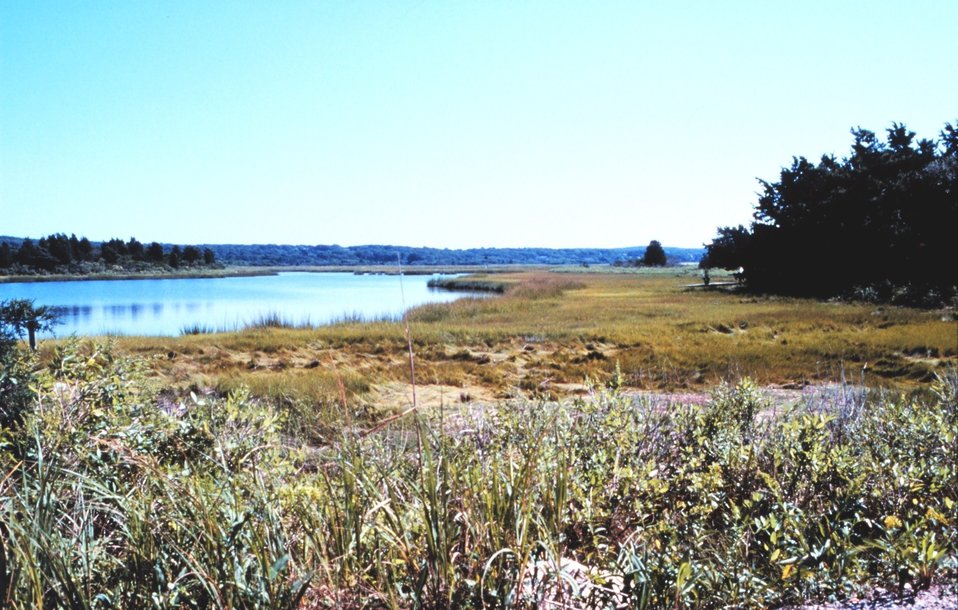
Great Sippewissett Marsh, West Falmouth